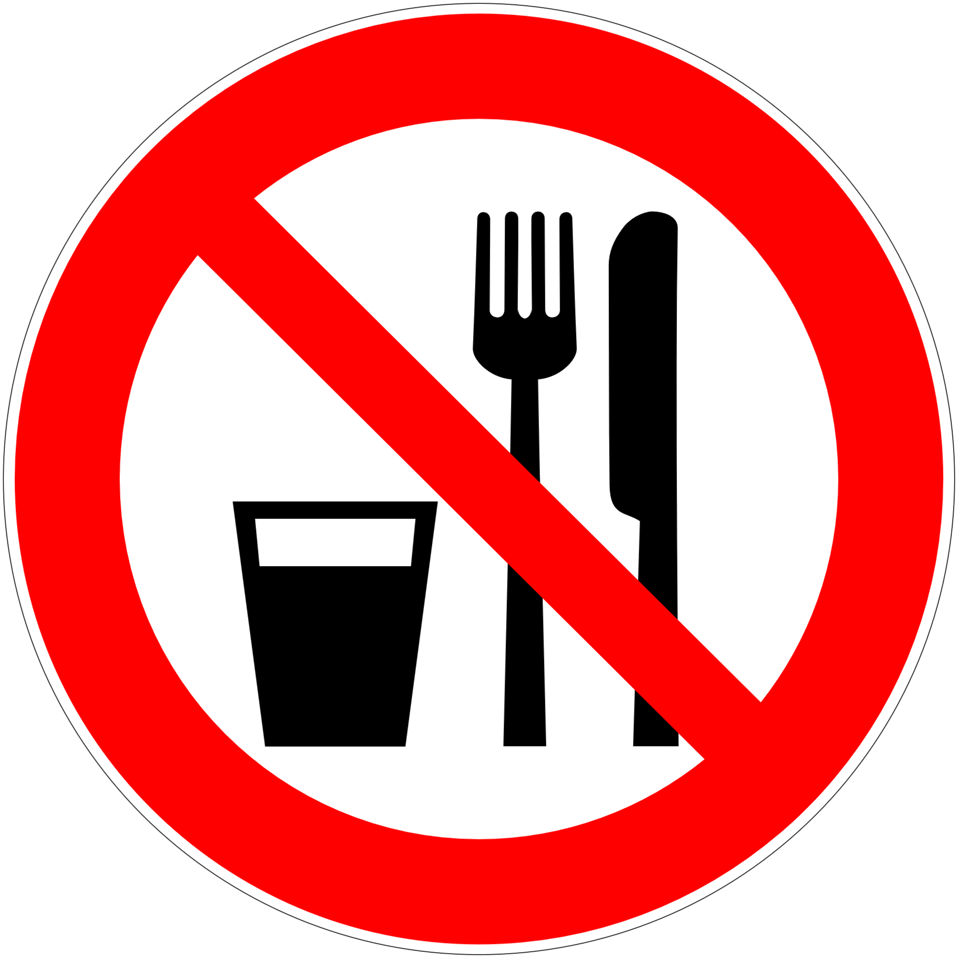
Deutsch: Essen und Trinken verboten, Verbotszeichen D-P019 nach DIN 4844-2 Do not eat or drink, prohibition sign D-P019 according to German standard DIN 4844-2